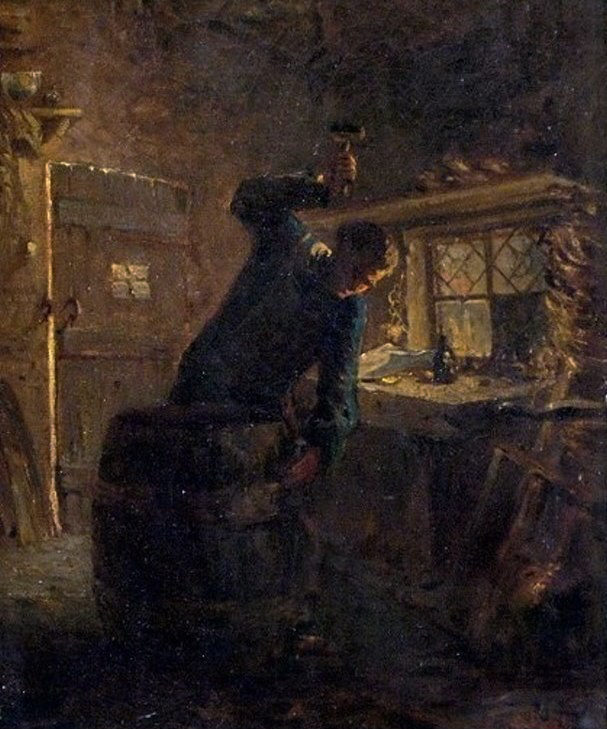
Böttcher (Küfer) in der Werkstatt